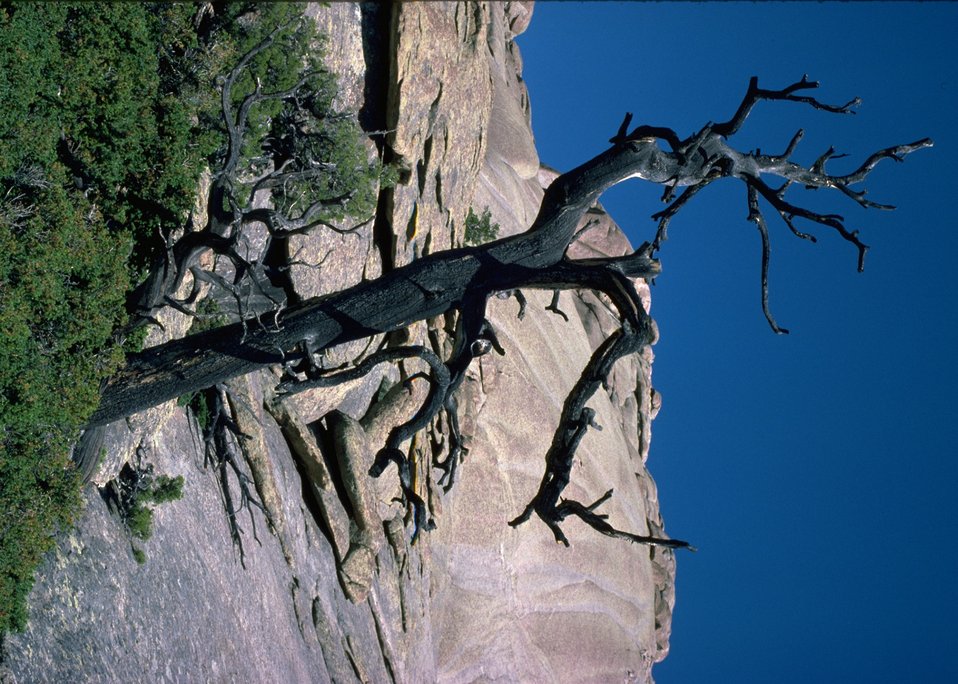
View of dead tree near rocky area.